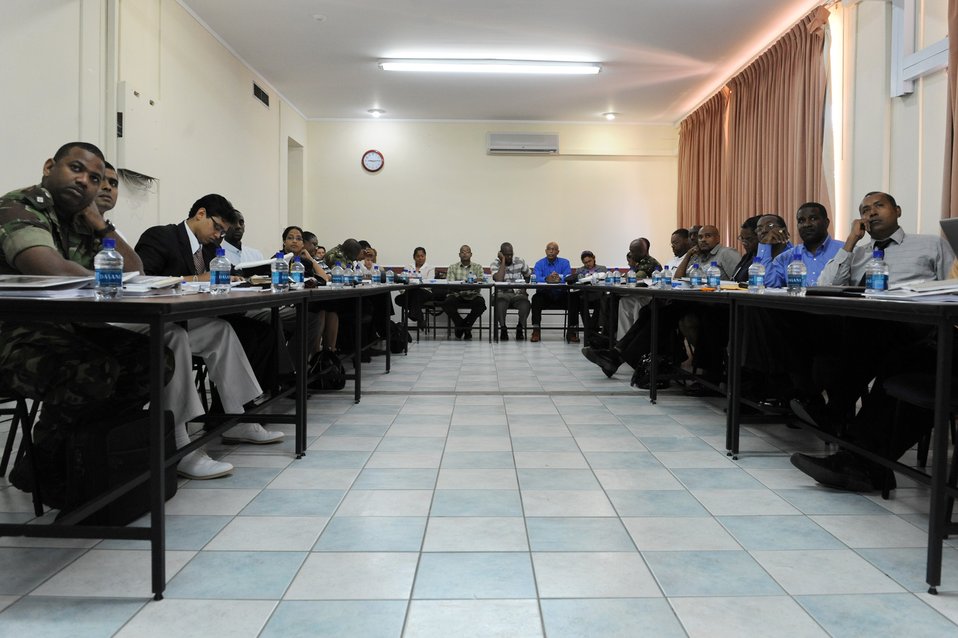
DIMO

Local officials attend a disaster planning and mass casualty response class for primary care providers Jul. 19, 2010, in Port of Spain, Trinidad and Tobago. The class is taught by the Defense Institute for Medical Operations, United States Air Force School of Aerospace Medicine, Brooks City-Base, Texas.